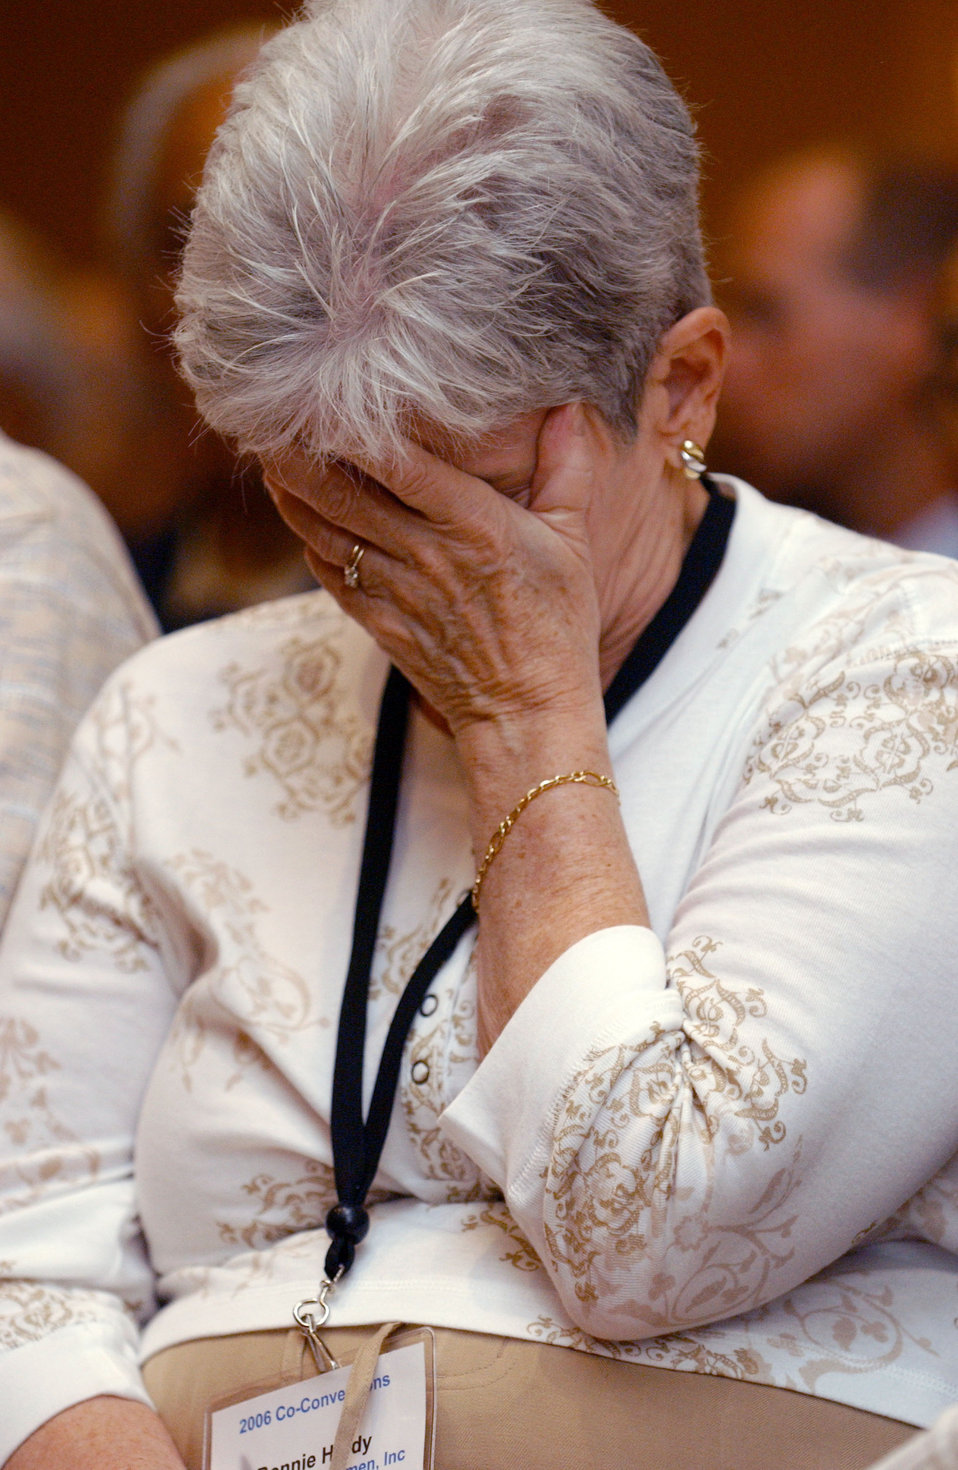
Tuskegee Airmen

Bonnie Hardy grieves during the